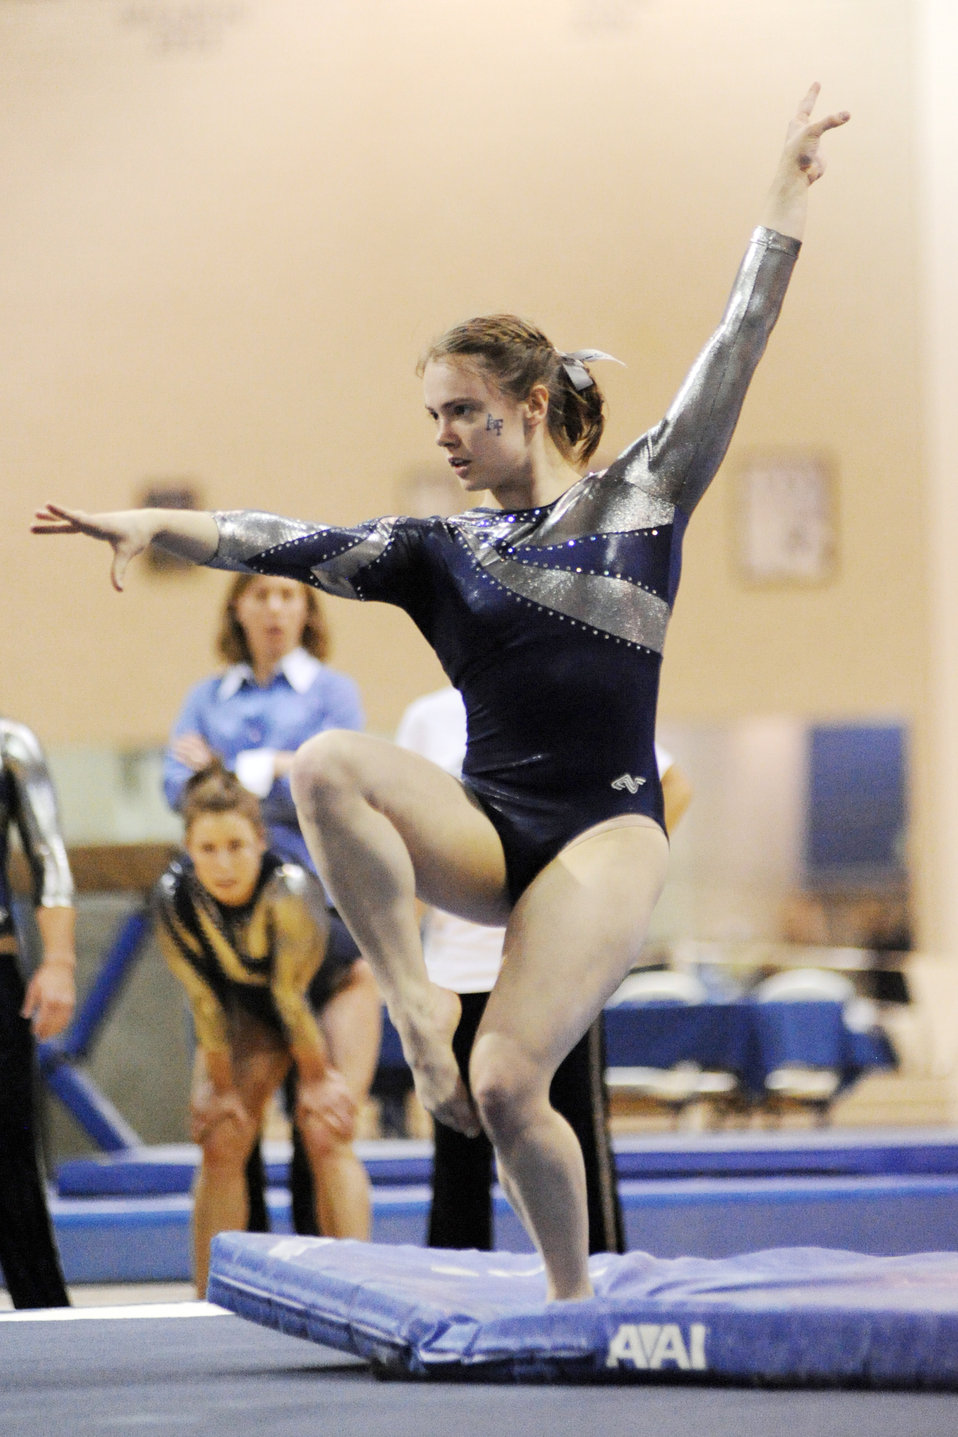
Women gymnasts compete in tri-meet

Sophomore Jenna Dudley competes in the floor exercise during the home tri-meet against Southeast Missouri State and Seattle-Pacific in the U.S. Air Force Academy's Cadet Gym Feb. 20, 2010. Dudley placed fifth in floor exercise with a score of 9.750. Air Force placed second in the team competition with a score of 188.00.